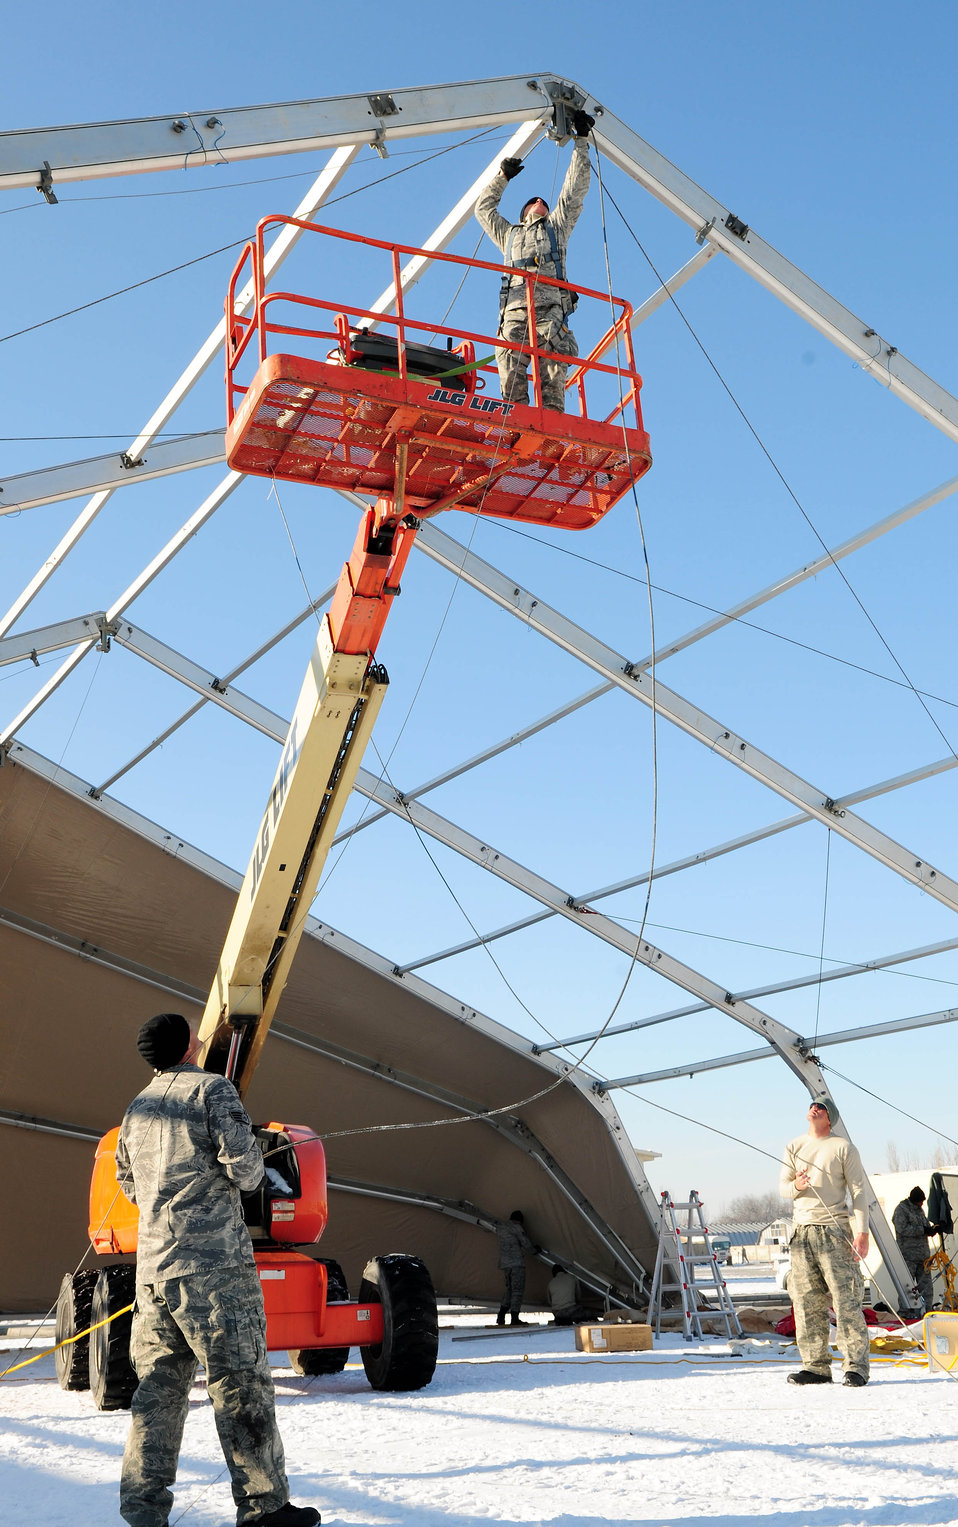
High-wire performance

Airmen construct a new dome tent at the Transit Center at Manas, Kyrgyzstan, Jan. 11, 2010. The tents are being built to support the influx of Airmen, Soldiers, Sailors and Marines who pass through here. The Airmen are deployed from the 49th Material Maintenance Squadron at Holloman Air Force Base, N.M.